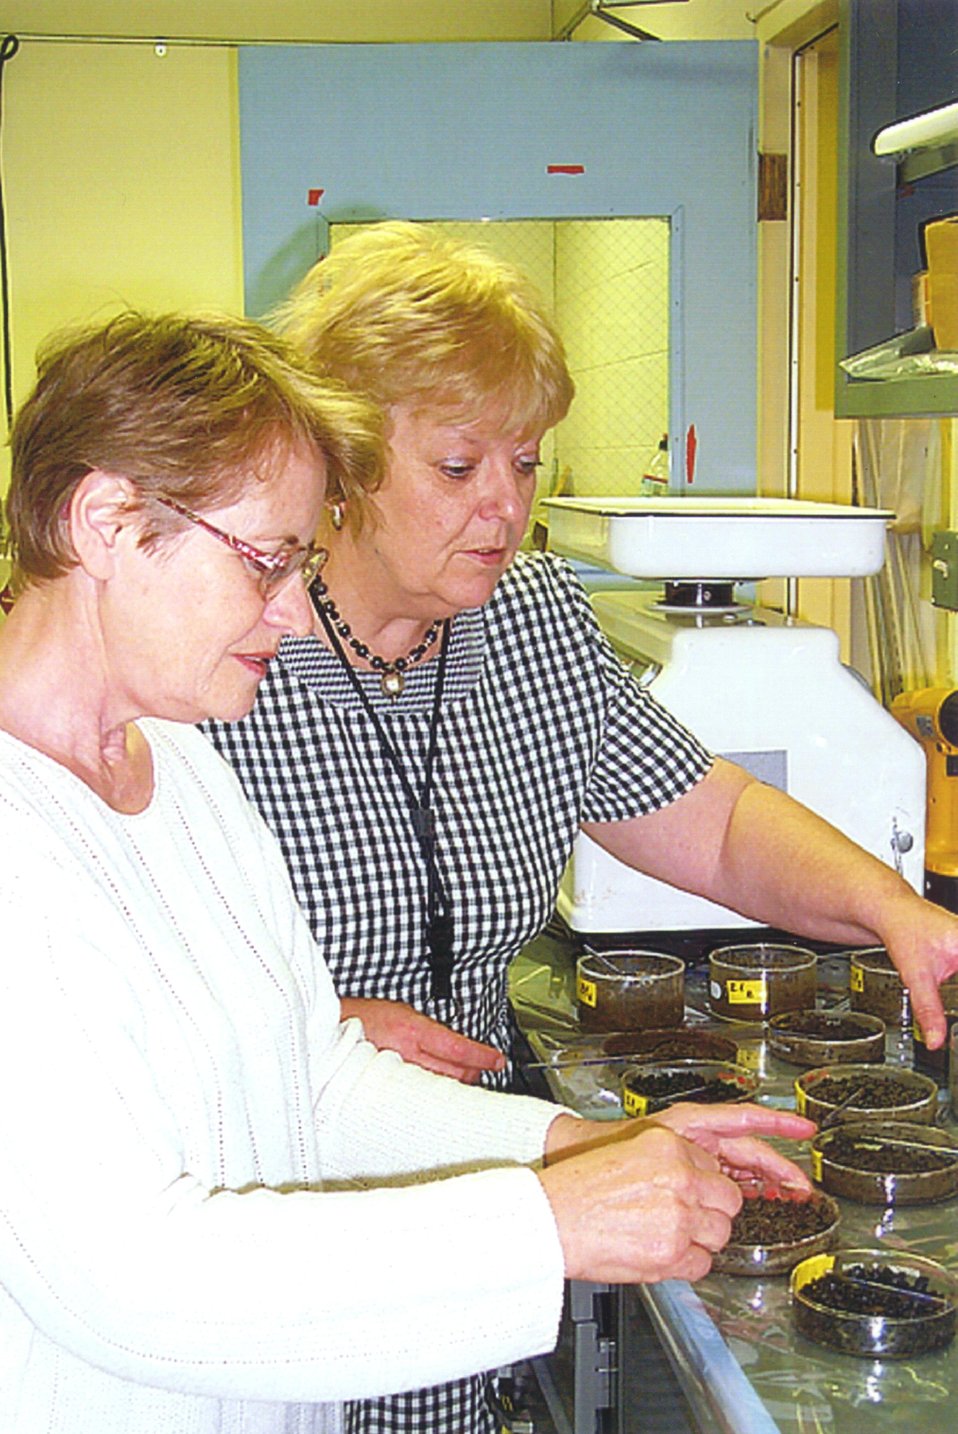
PNNL SCIENTISTS PREPARE TO TEST MICROBE FOR ITS ABILITY TO CLEAN UP CONTAMINATED SOIL.

AS PART OF PNNL'S WORK IN BIOREMEDIATION, RUSSIAN SCIENTIST VALENTINA MURYGINA AND PNNL SCIENTIST EVGEGUENIA RAININA PREPARE SAMPLES OF SOIL MIXED WITH OIL FOR LAB STUDIES OF A MICROBE THAT IS BEING TESTED FOR ITS ABILITY TO CLEAN UP CONTAMINATED SOIL.